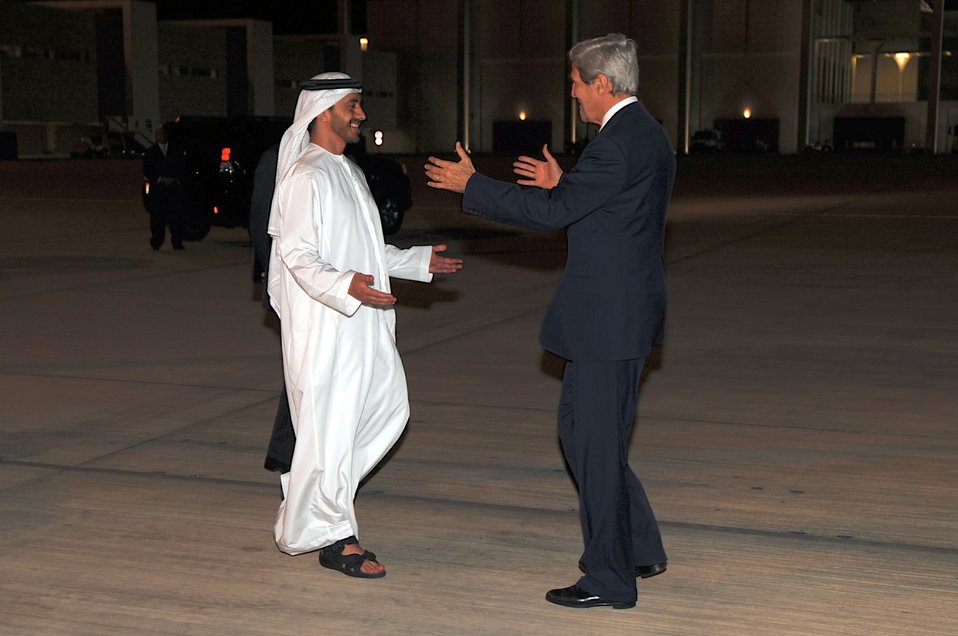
Secretary Kerry is Greeted by UAE Minister of Foreign Affairs Abdullah bin Zayed Al Nayhan

U.S. Secretary of State John Kerry is greeted by United Arab Emirates Minister of Foreign Affairs Abdullah bin Zayed Al Nayhan upon his arrival in Abu Dhabi, United Arab Emirates, on November 10, 2013.